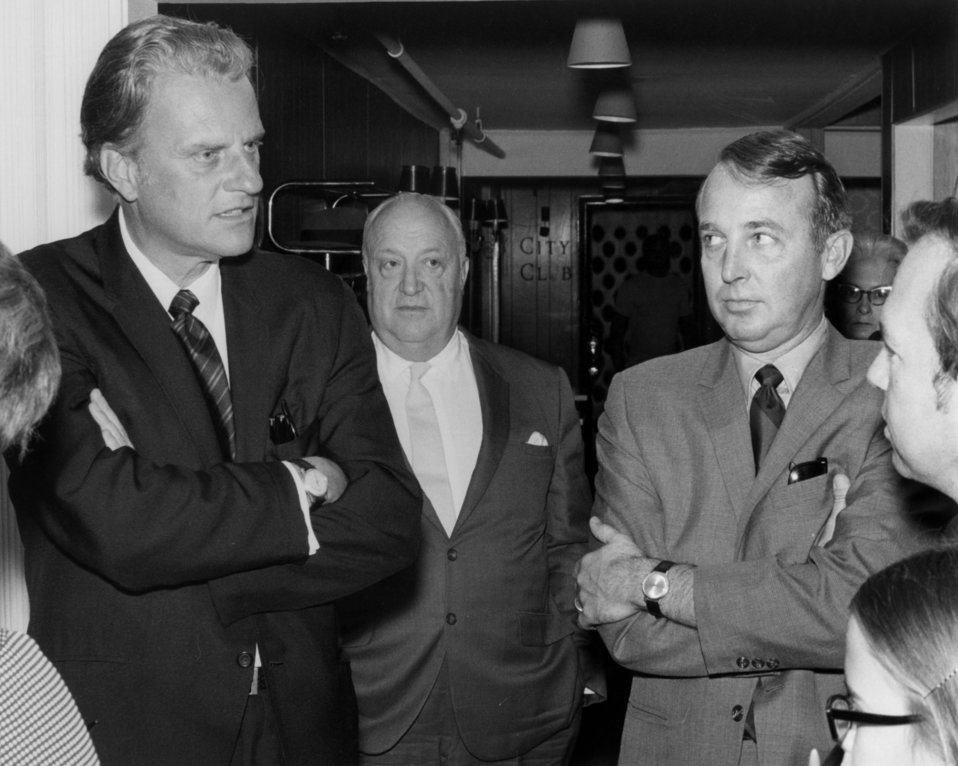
Rev. Billy Graham visit to Oak Ridge

70-95-1 DOE photo Frank Hoffman
Rev. Billy Graham visit to Oak Ridge Tennessee 5-23-70